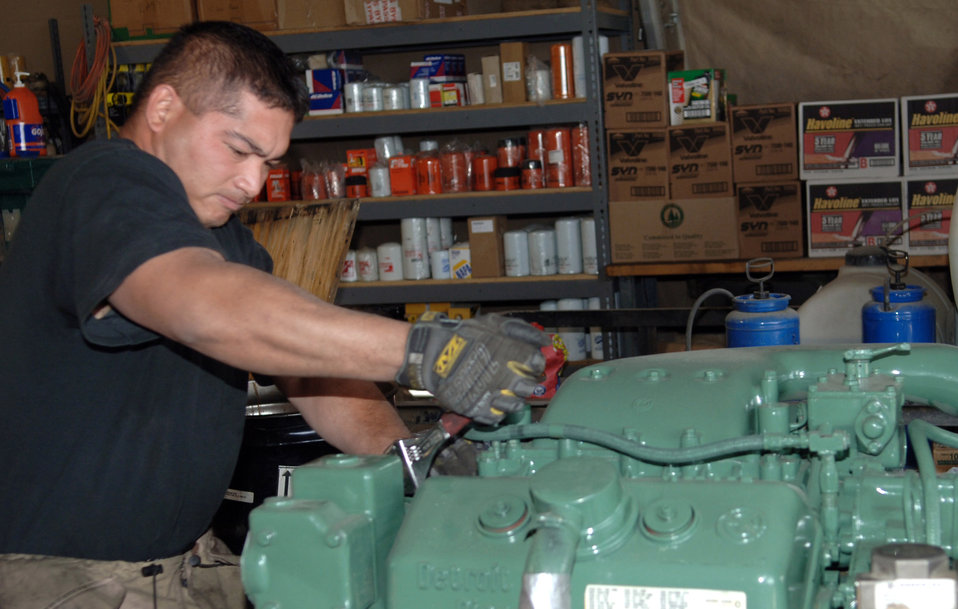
Mechanics work to keep vehicles in motion

Staff Sgt. Fernando Mendiola places oil fittings on a new 60K aircraft loader engine. Sergeant Mendiola is deployed to the 455th Logistic Readiness Squadron from Yokota Air Base, Japan.